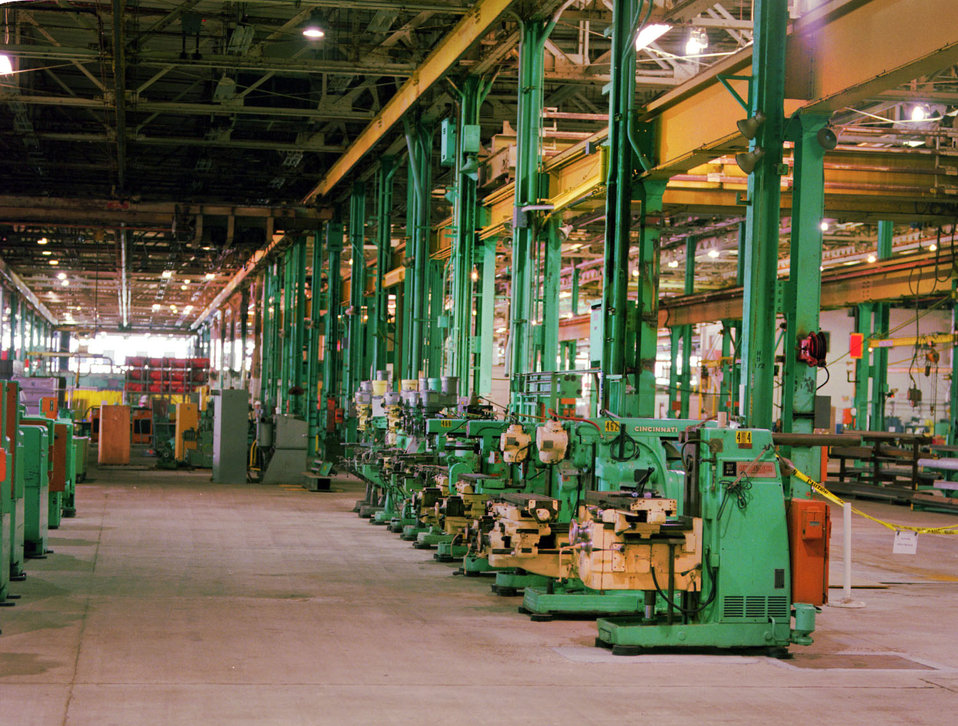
98-171-3 DOE photo by Lynn Freeny

ETTP Reindustrialization Oak Ridge Tennessee 5-19-1998